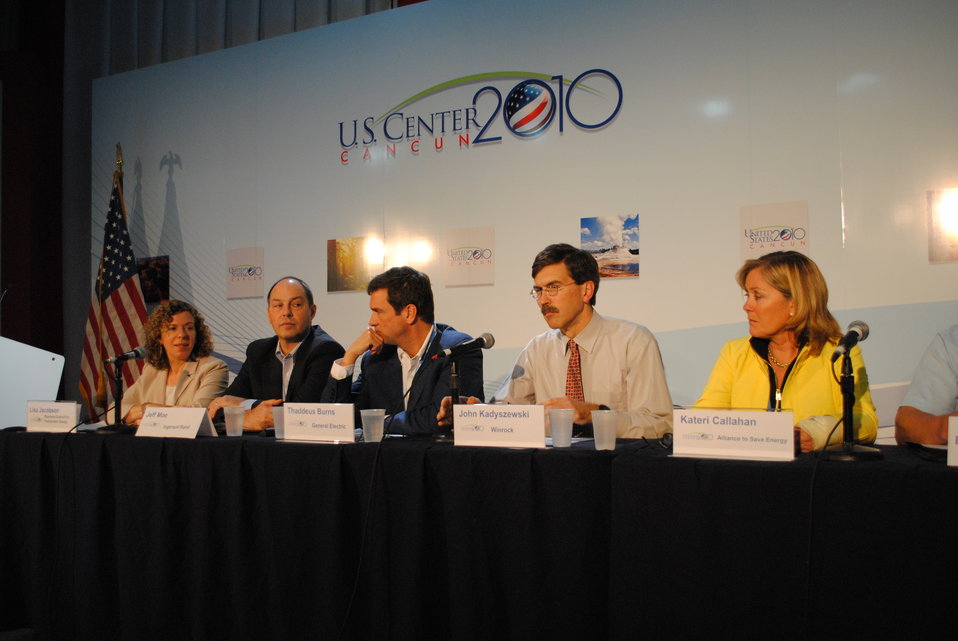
Panelists Respond to Questions

Panelists on the panel, USAID-CT PFAN: Facilitating Clean Energy Finance and Technology Transfer for Developing Countries, respond to questions from the audience at the U.S. Center at COP-16 in Cancun, Mexico, on December 7, 2010.